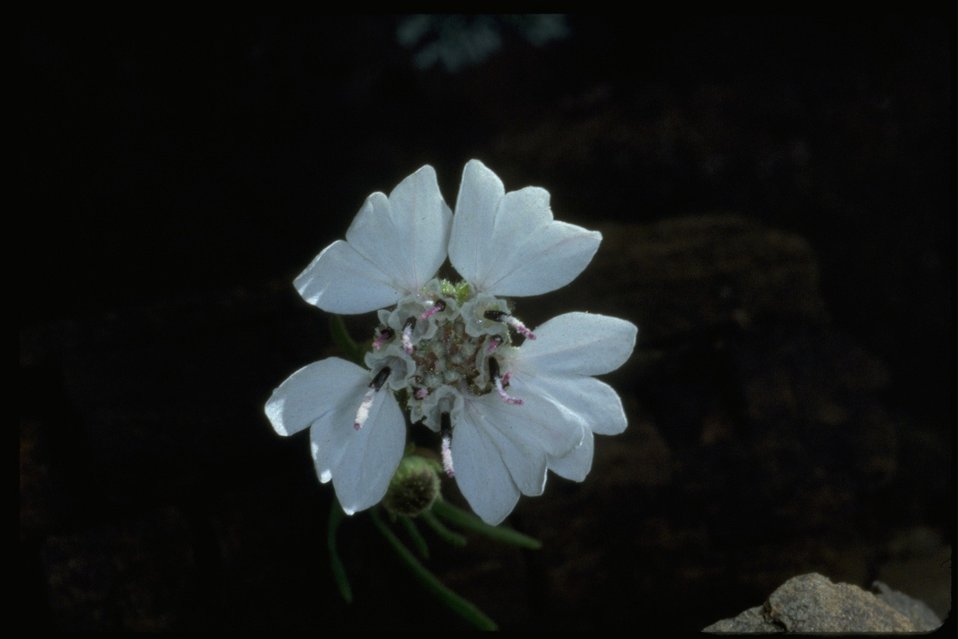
Close up shot of wild onion.